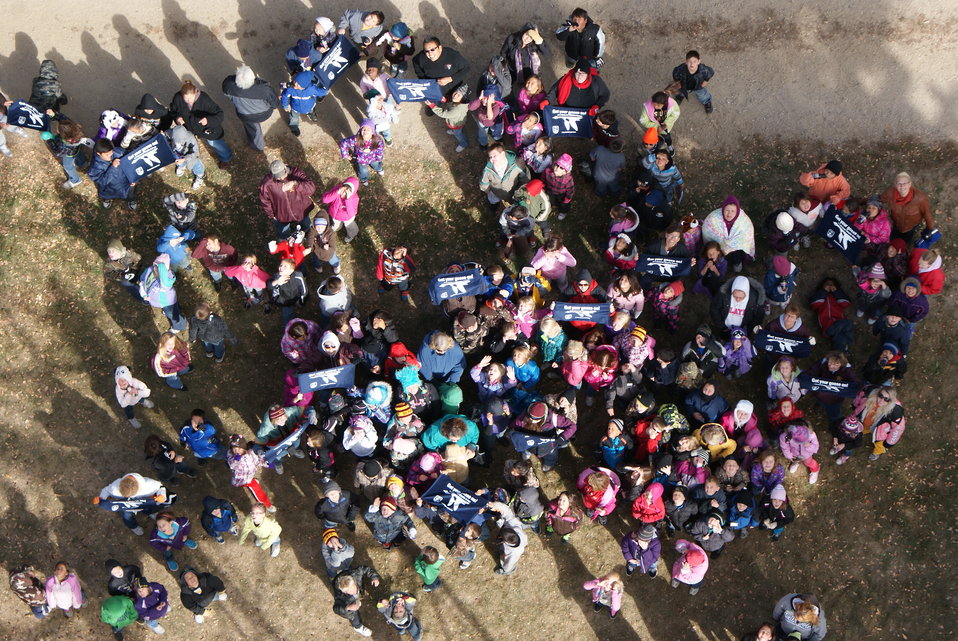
GYGO! Aerial Shot

Taken at South Dakota's Waubay National Wildlife Refuge.